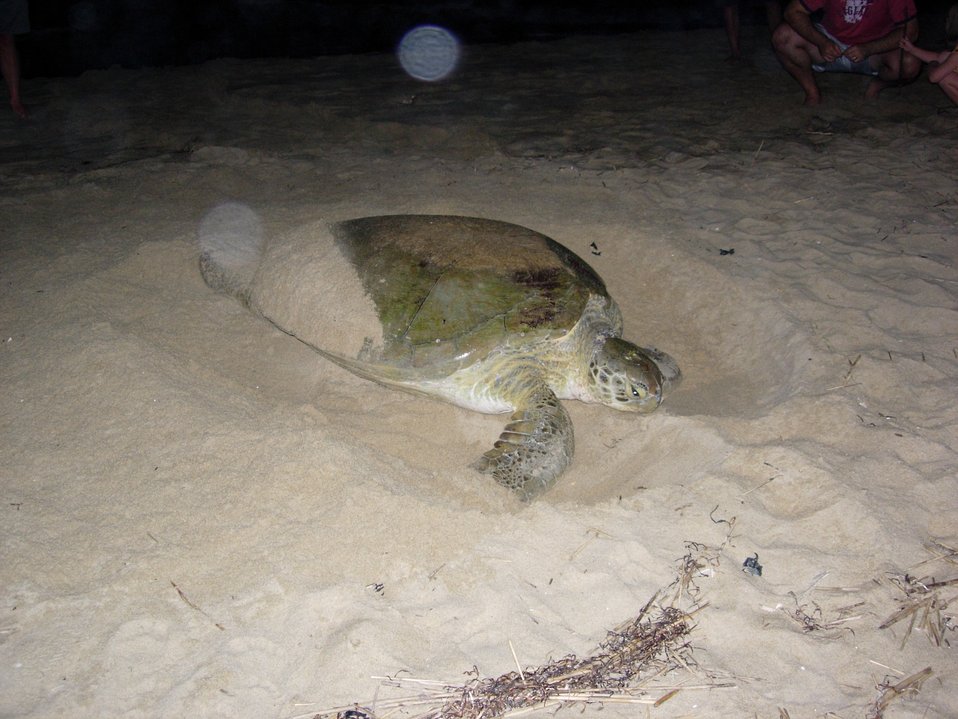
Green sea turtle nesting at Back Bay National Wildlife Refuge in Virginia.